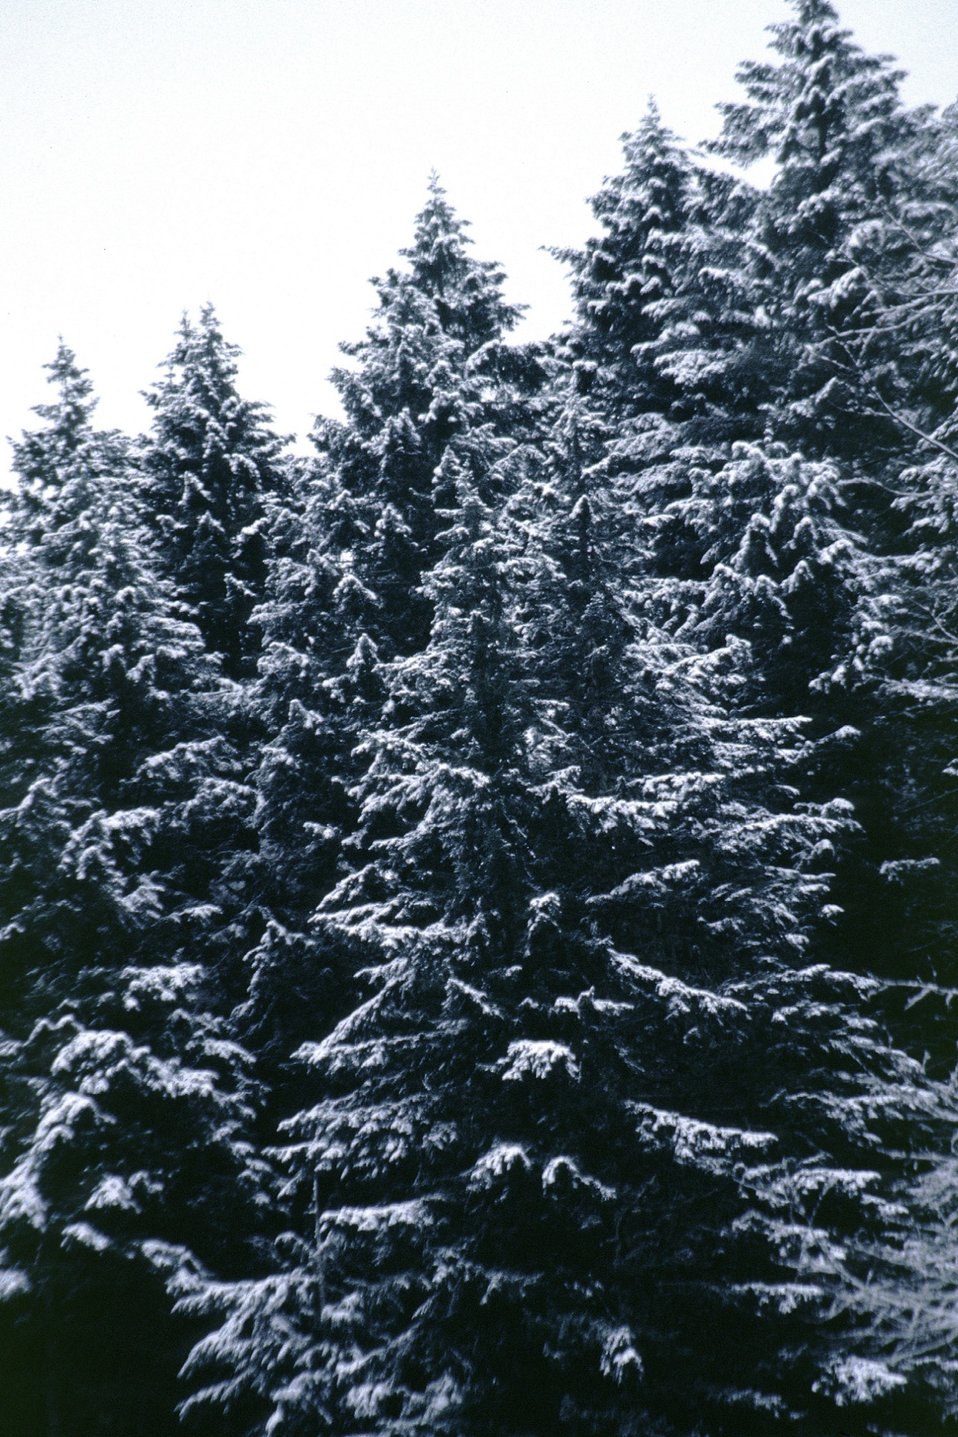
Mid Winter forest scene in the Mollala Corridor.